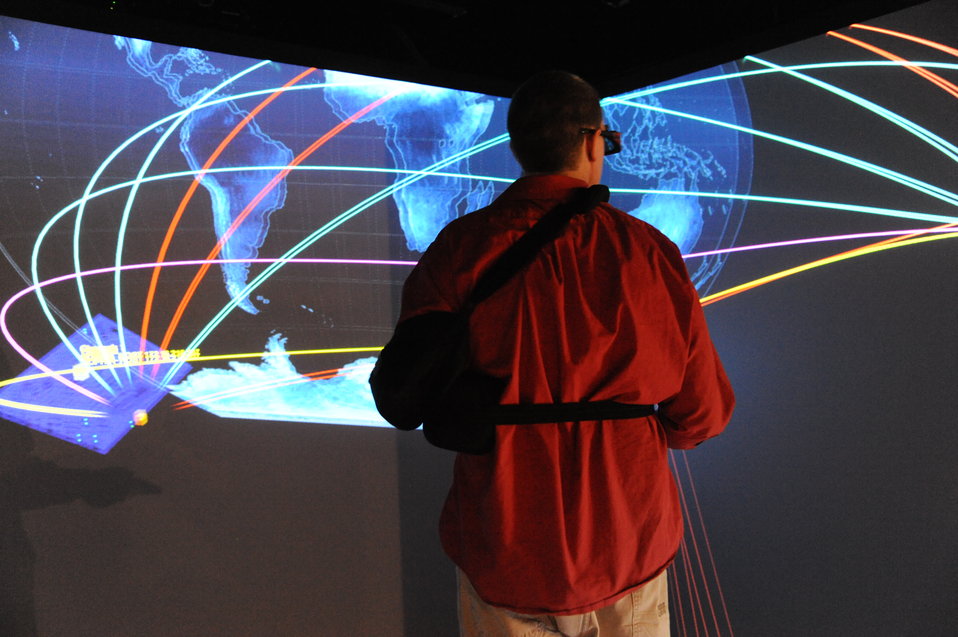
At Idaho National Laboratory, SOPHIA is a cyber security software tool that helps protect energy sector networks and control systems.

INL developed it as an easy, elegant way to help network operators detect intruders and other anomalies.